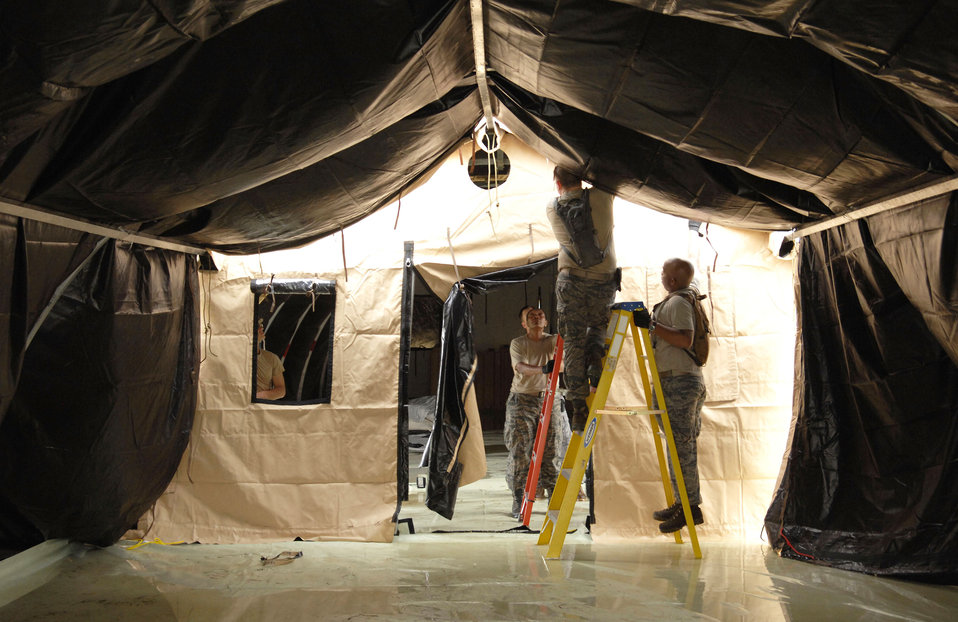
Air Force humanitarian team arrives on Chuuk

Humanitarian Assistance Rapid Response Team members work together to construct medical tents during a validation exercise Sept. 2, 2009 on Chuuk in the Federated States of Micronesia. The HARRT is the Air Force's new expeditionary medical capability designed to deploy within 24 hours of notice during disaster relief operations. During the deployment, the team will treat 350 to 500 Chuukese patients per day.